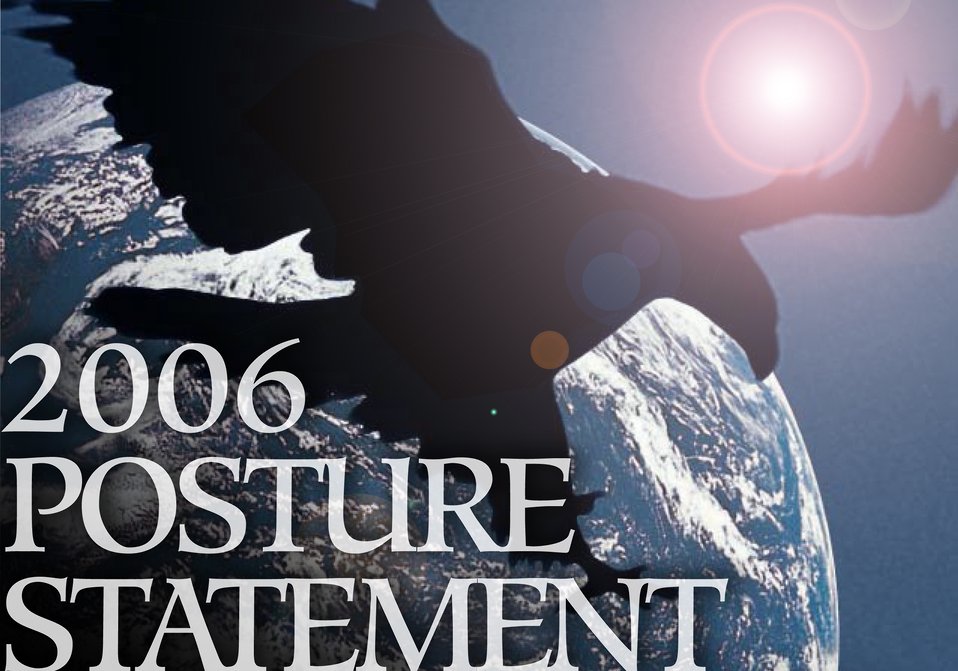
2006 Posture Statement